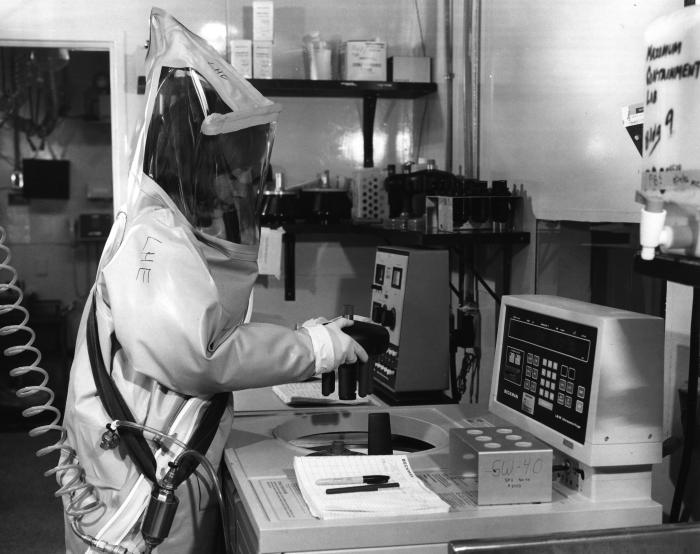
This 1984 photograph depicted a Centers for Disease Control laboratorian dressed in a maximum containment suit, while she was placing specimens in a centrifuge.